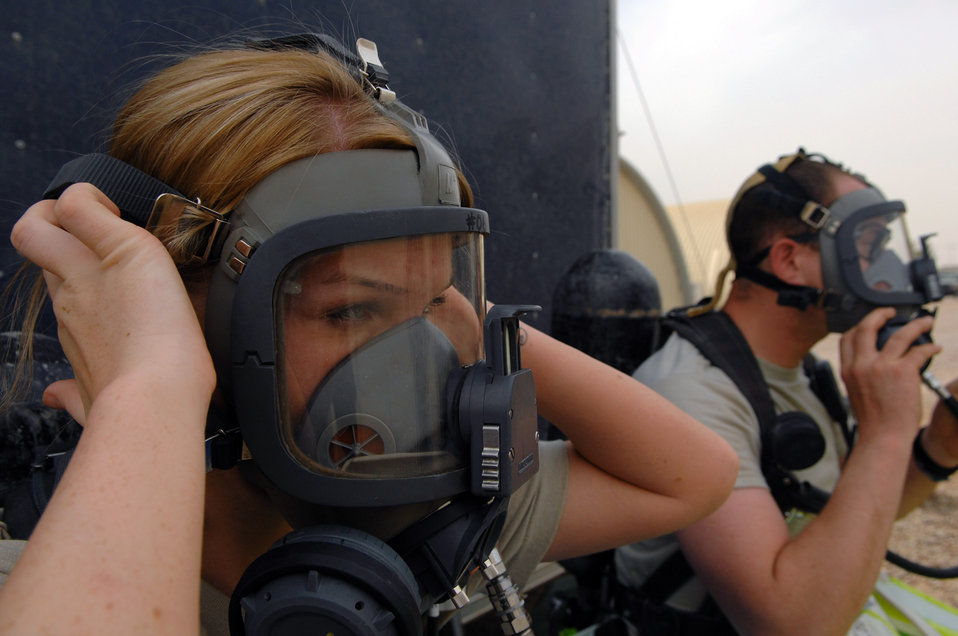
Battle drills condition emergency responders

Senior Airman Krista McVicar practices tightening her oxygen mask March 26 at Balad Air Base, Iraq, during an emergency management drill. Emergency managers wear protective suits and breathe through air tanks to guard against chemical, biological, radiological or nuclear substances that may be present during a real-world attack. Emergency management Airmen conduct battle drills to keep their skills sharp and ensure they are familiar with wearing all the required gear. Airman McVicar is a 332nd Expeditionary Civil Engineer Squadron emergency manager deployed from Davis-Monthan Air Force Base, Ariz.